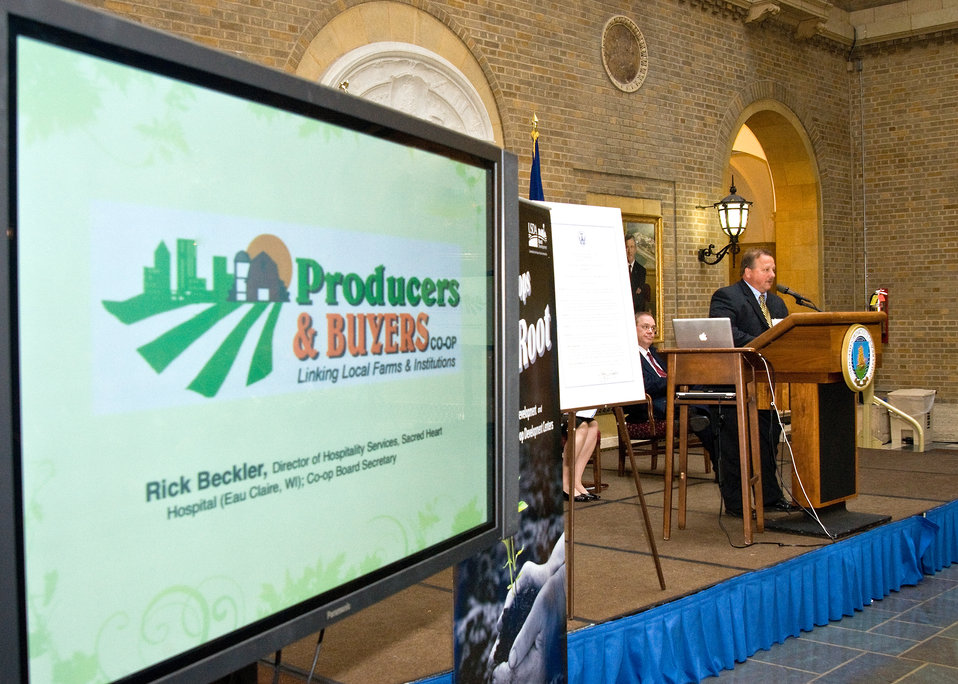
Rick Beckler, Director of Hospitality, Sacred Heart Hospital, Eau Clair, Wisconsin spoke of the decision of Sacred Heart Hospital to form the Producers and Buyers Cooperative, a rural cooperative to source food locally for the hospital supporting family farms during the celebration of October as National Co-op Month at an event at the Department of Agriculture, Tuesday, October 5, 2010 in Washington, DC. USDA Photo 10di1517-45 by Bob Nichols.